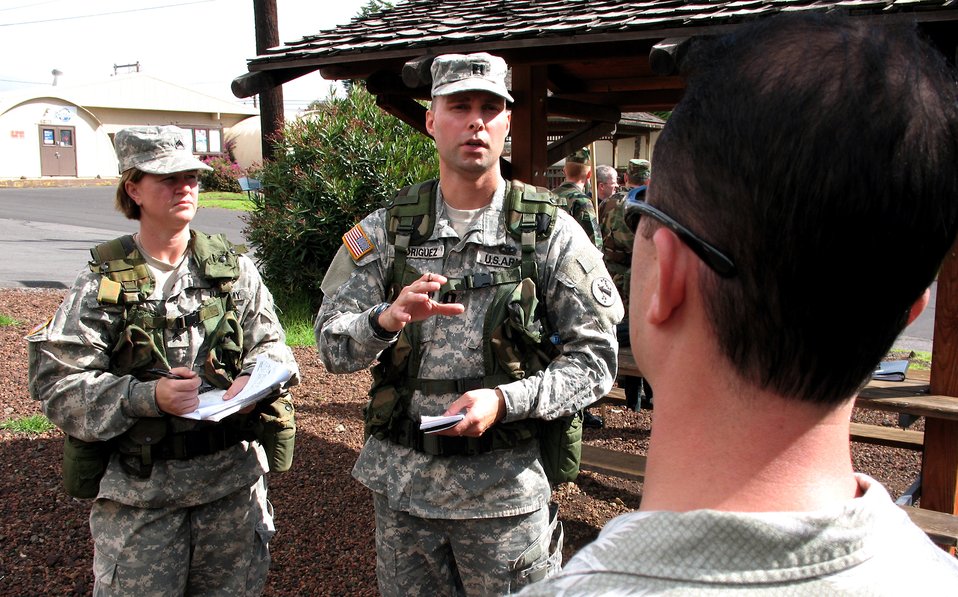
PACAF legal teams train to deploy

Army Sgt. Candy Whimple, a paralegal, and Army Capt. Bernal Rodriguez, a lawyer, both from the U.S. Army Pacific legal office, negotiate a situation Dec. 10 with a simulated non-governmental official, played by Tech. Sgt. Drew Brown of the Pacific Air Forces legal office. The Soldiers are two of 24 military members deployed to the island of Hawaii's Pohakuloa Training Area for the Pacific Air Forces PACJOLE, or Pacific Joint Operations Legal Exercise, which runs from Dec. 9 to 14.